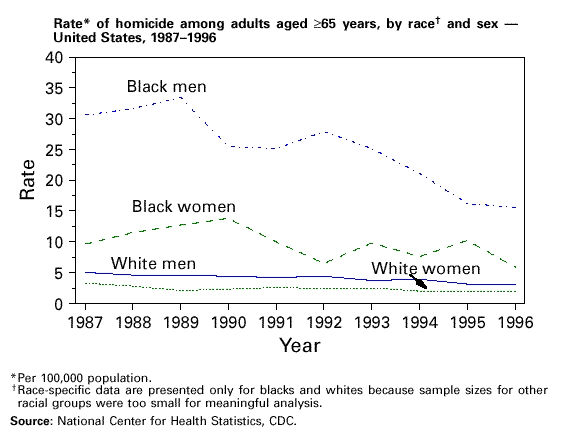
Rate of homicide among adults aged 65 years and older, by race and sex.